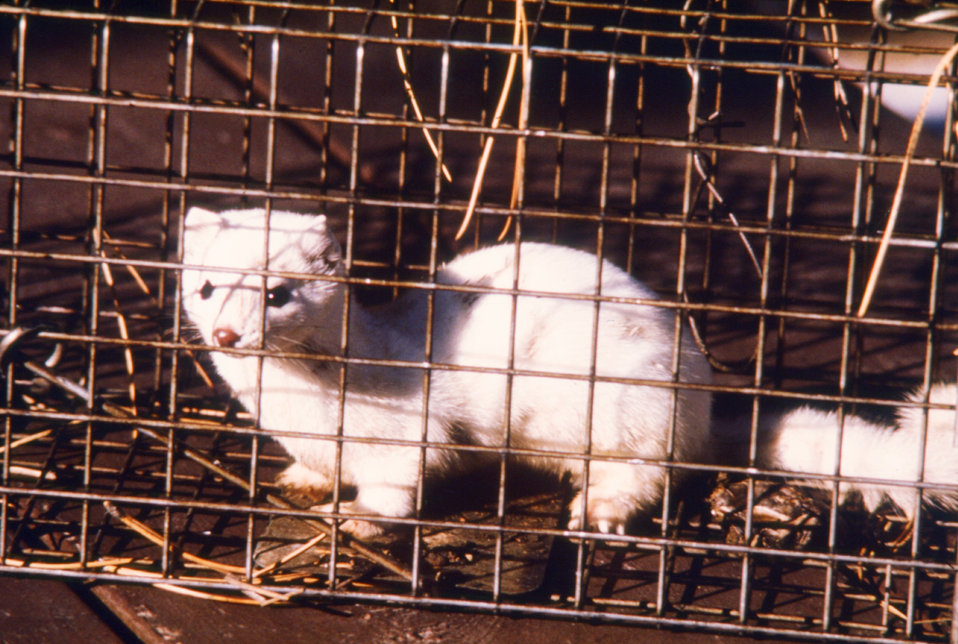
The long-tailed weasel, Mustela frenata, here seen in its winter pelage, is a carrier of plague vectors.